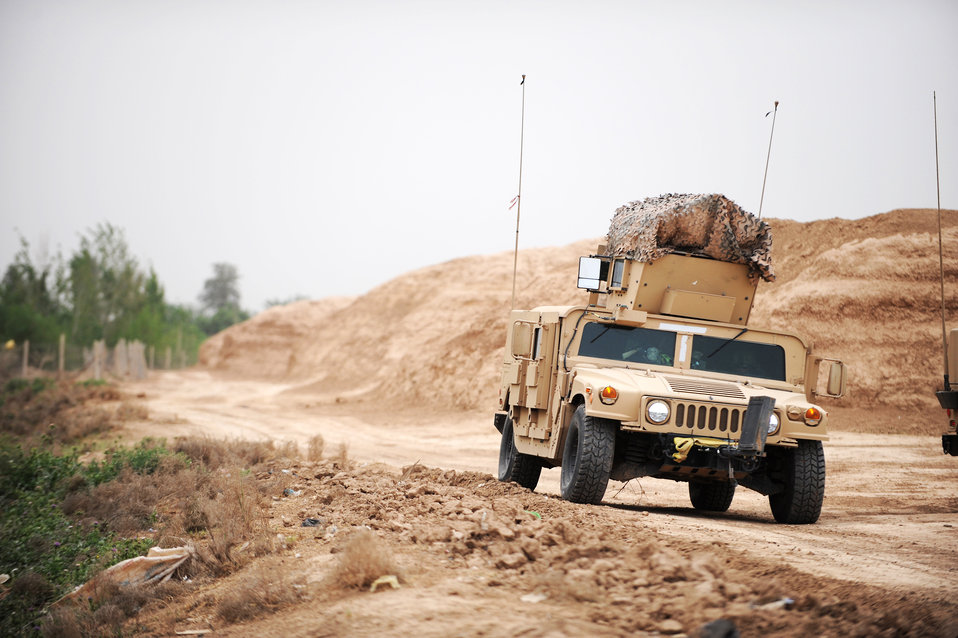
Joint Base Balad security forces Airmen patrol Iraqi villages

A Humvee patrol from the 532nd Expeditionary Security Forces Squadron conducts security in the Iraqi village of Bakr April 9 in support of Operation Iraqi Freedom.